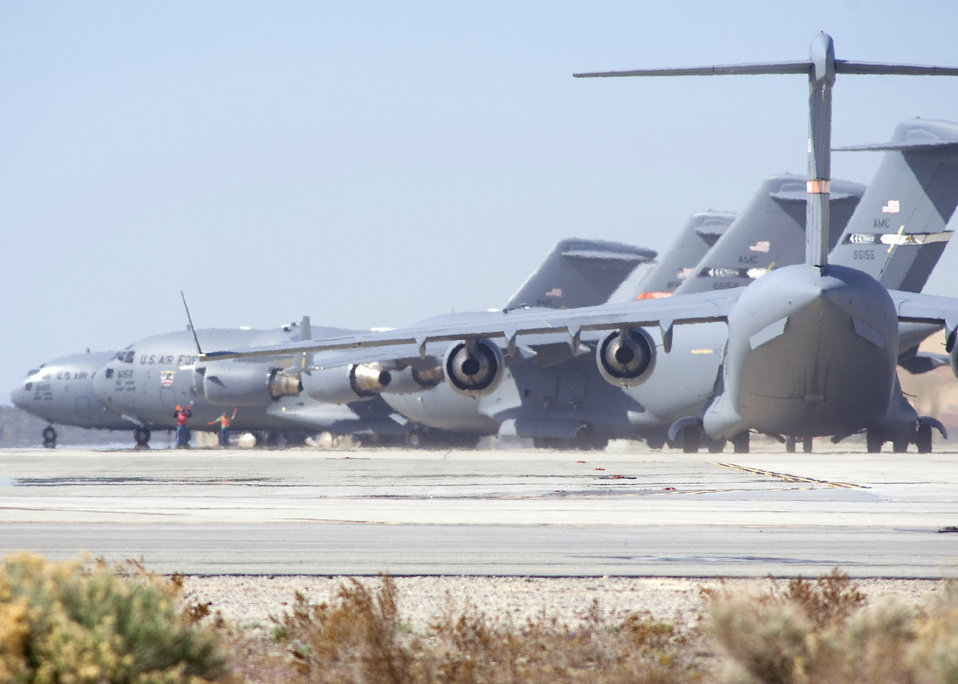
C-17s invade Edwards sky

C-17 Globemaster IIIs at Edwards Air Force Base, Calif., taxi out for a six-ship formation testing mission. The C-17 is capable of rapid strategic delivery of troops and cargo to main operating bases or directly to forward bases in deployed environments.